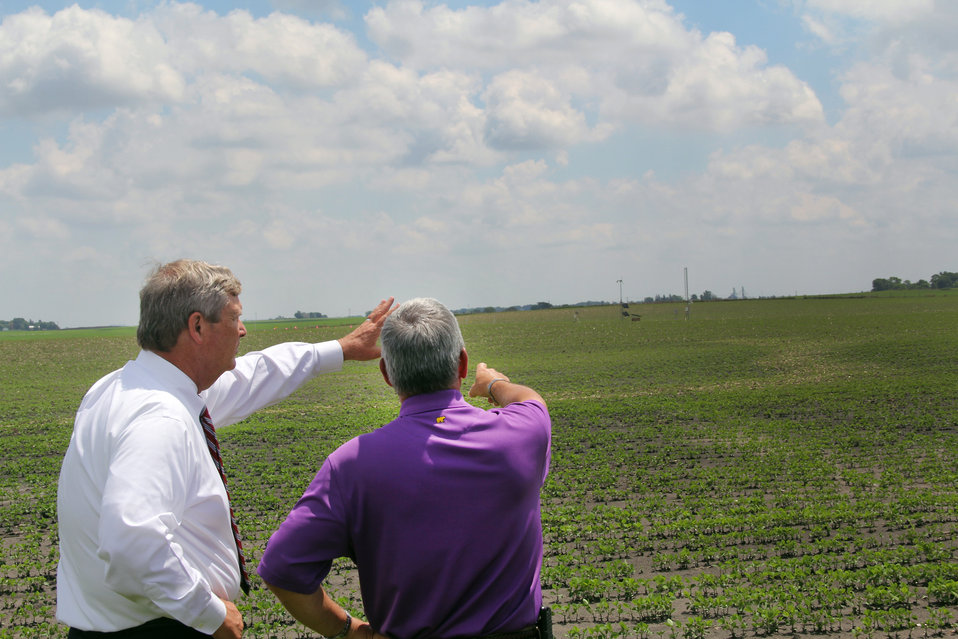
Agriculture Secretary Tom Vilsack listens to U.S. Department of Agriculture (USDA) Agricultural Research Service (ARS) supervisory plant physiologist Dr. Jerry Hatfield explain the equipment to gather information on climate changes and impacts on corn and soybean plants in Iowa on Jun. 6, 2014.